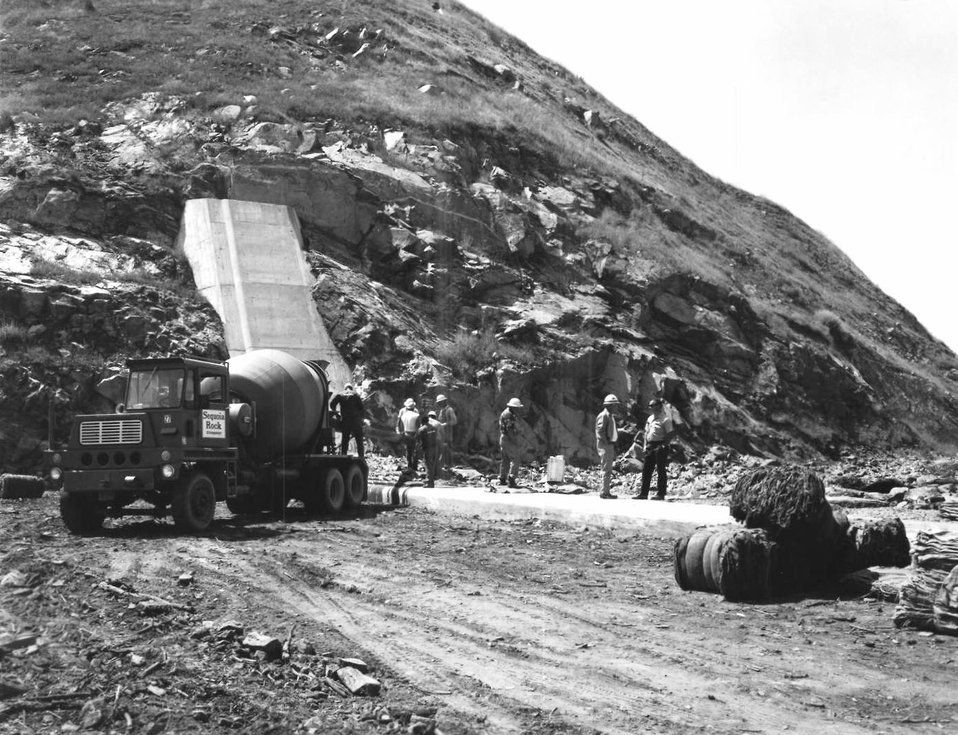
Success Dam

A historical view of the spillway’s left abutment at Success Dam, located near Porterville, Calif., May 20, 1967. The U.S. Army Corps of Engineers Sacramento District completed construction of Success Dam in 1961 and the reservoir provides flood risk management, water storage and recreational benefits to the local area.